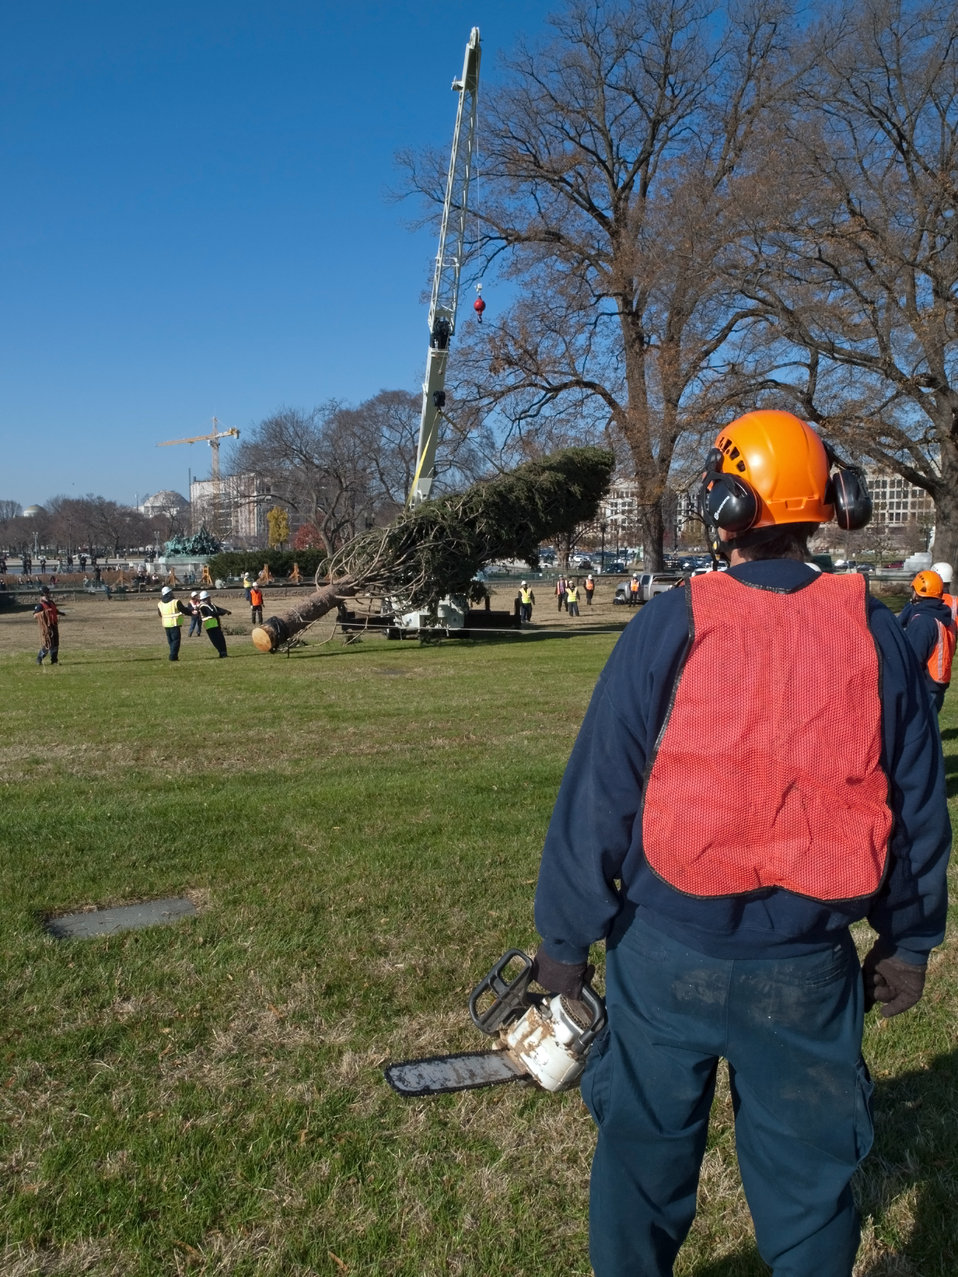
Members of the Capitol grounds crew move the 2012 Capitol Christmas Tree from its truck after it arrived in Washington, D.C. on Nov.26, 2012. The 73-foot Englemann spruce traveled from the White River National Forest in Colorado.